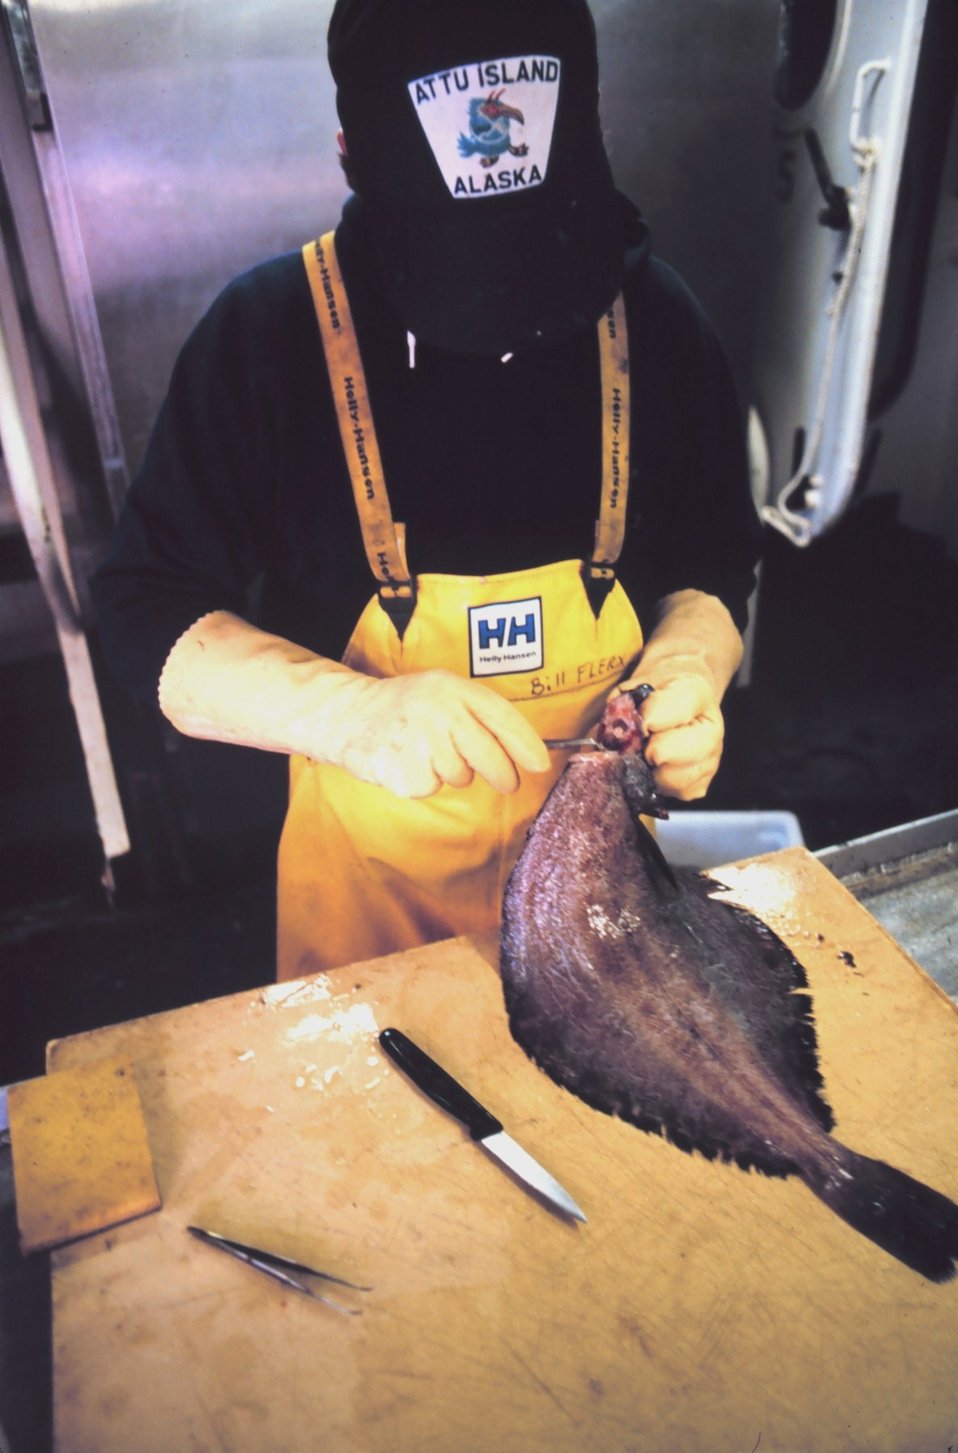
Scientist obtaining otolith (ear bone) for age determination